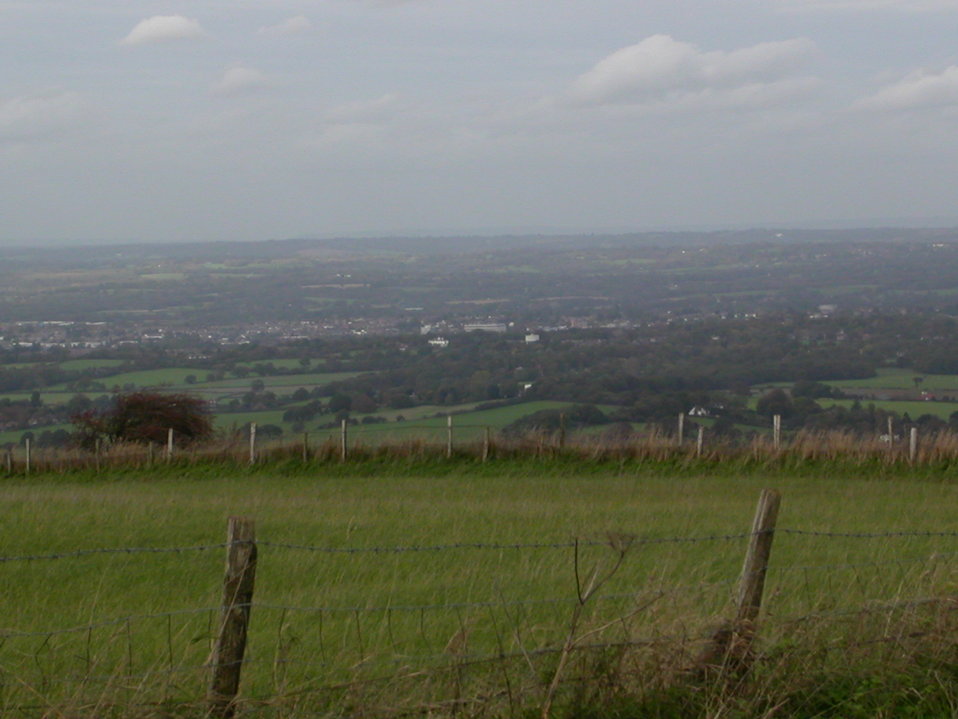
Northward view from summit of Ditchling Beacon.